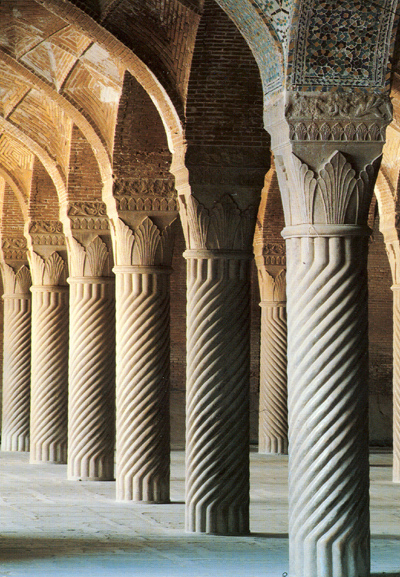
Vakeel-mosque